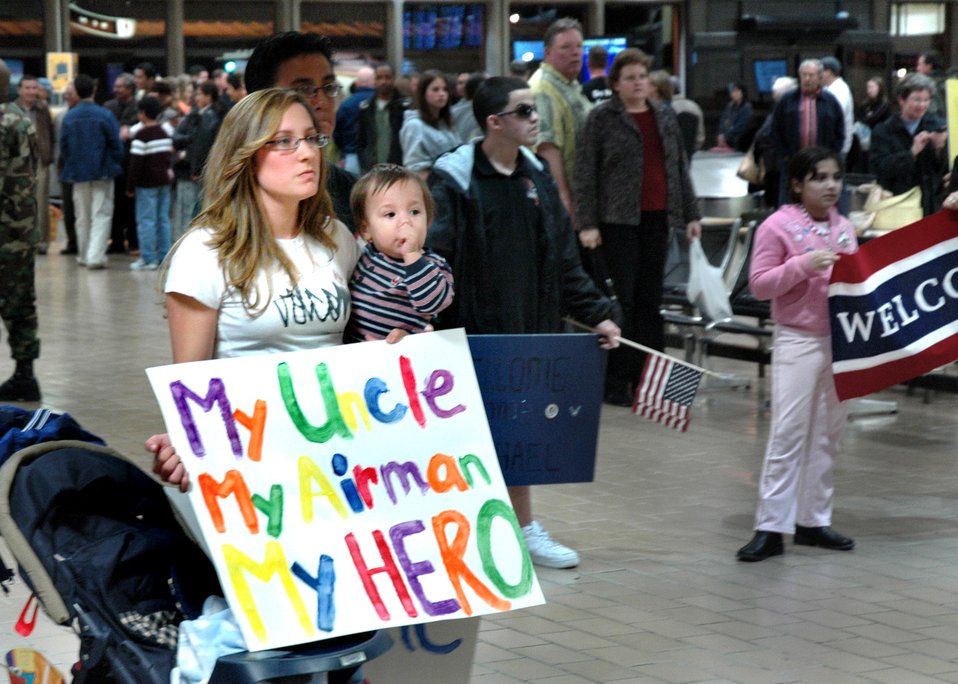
A hero's welcome

Rachel Clayton and her son Tegan, await the return of family member Air Force Reservist Staff Sgt. Steven Clayton March 4 at Sacramento International Airport. Sergeant Clayton was one of four Airmen from the 940th Security Forces Squadron at Beale Air Force Base, Calif., who returned home after six months' service at Camp Bucca, Iraq.